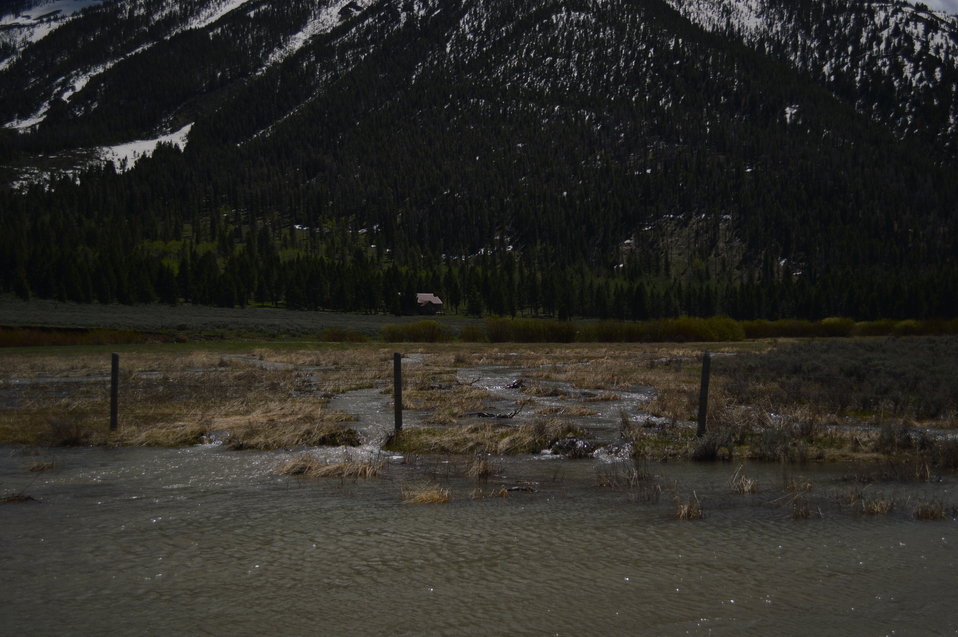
Regional Leadership Visit to Montana 2014